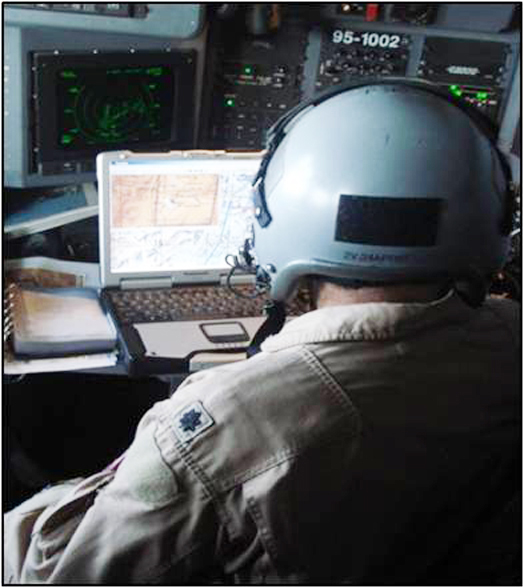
500th airborne intel system hits field

An aircrew member uses the Combat Track II system, the 500th system was delivered to the field last month. Combat Talon II allows crew aboard the air mobility fleet, as well as on some bombers, to maintain full awareness of friendly and potential hostile aircraft positions. It also alerts them to ground threats, including mobile surface-to-air missile sites.